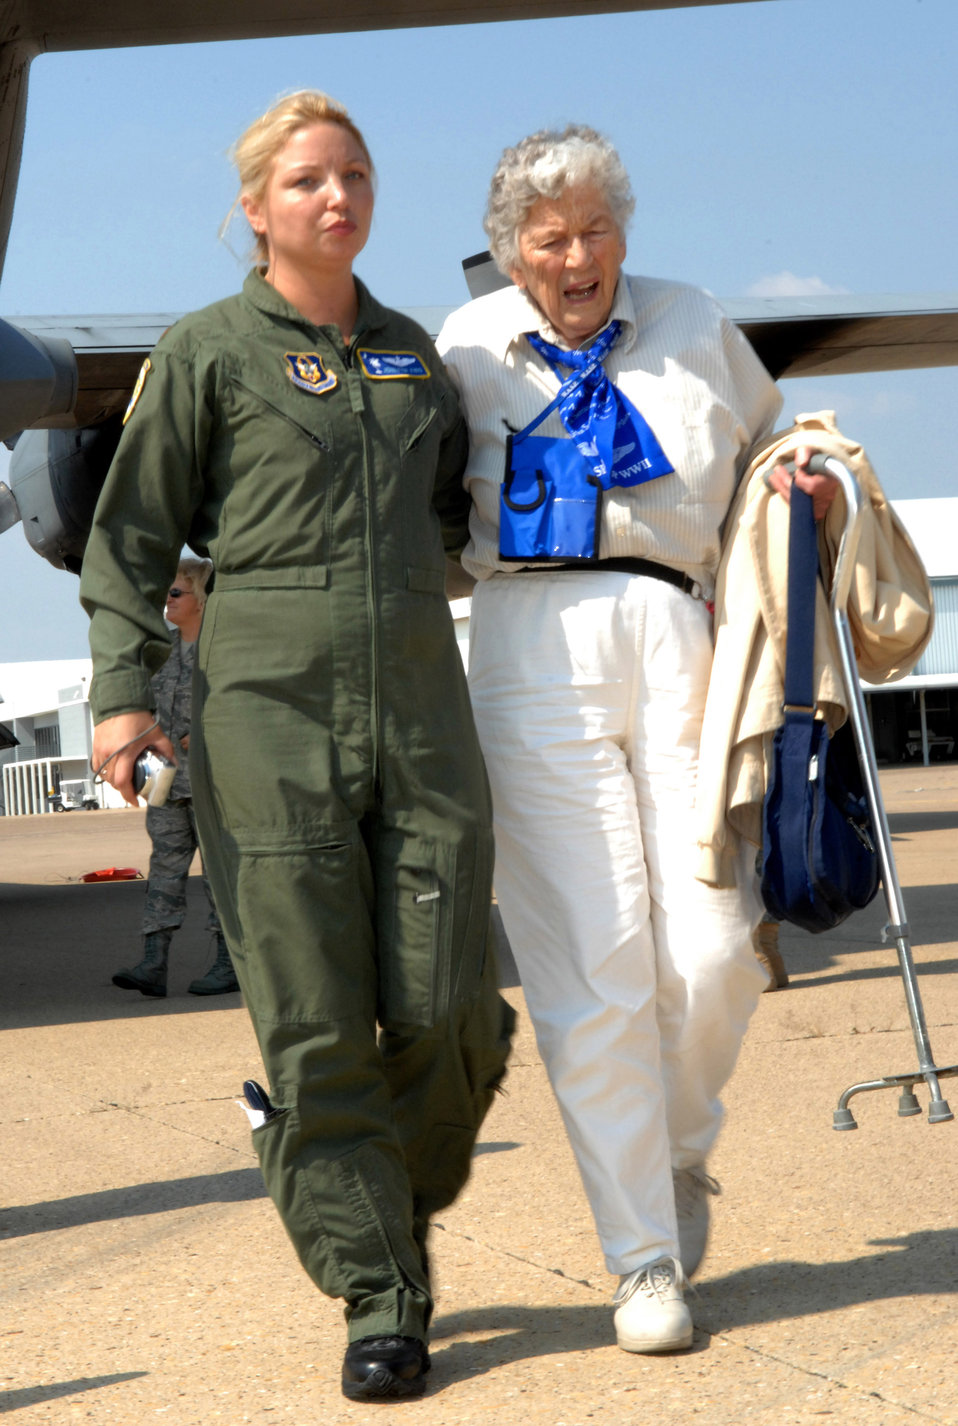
World War II women aviators gather for final reunion

Maj. Jennifer King escorts Kay Gott, an original member of the Women Airforce Service Pilots from World War II, during the WASP's final flight on a C-130 Hercules Sept. 25 at Irving, Texas. Major King is a C-17 Globemaster III pilot with the 315th Airlift Wing from Charleston Air Force Base, S.C.